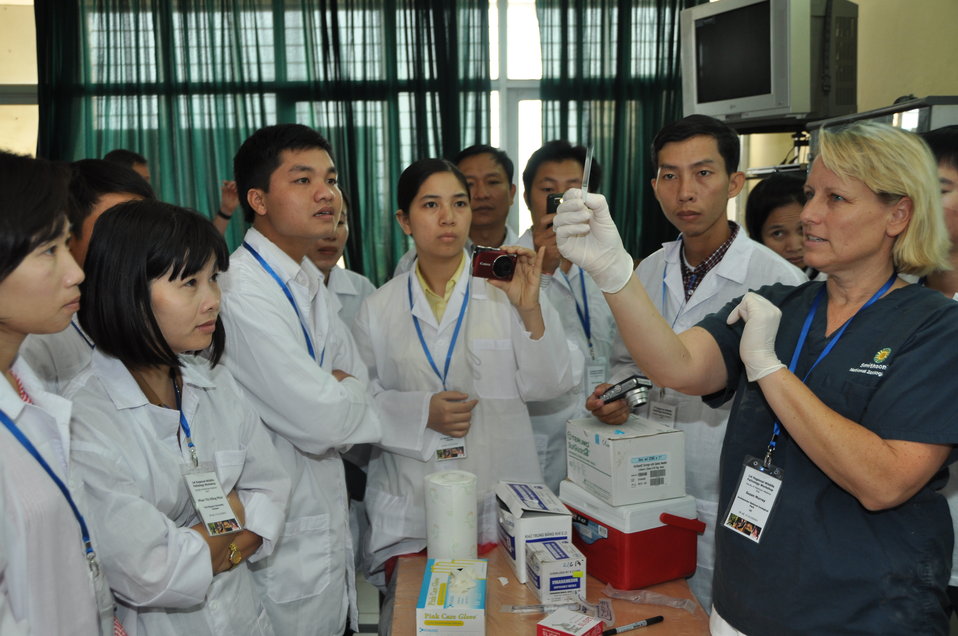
USAID EPT Smithsonian Pathology Training to Detect Emerging Infectious Diseases Wildlife and Other Animals in Vietnam Workshop